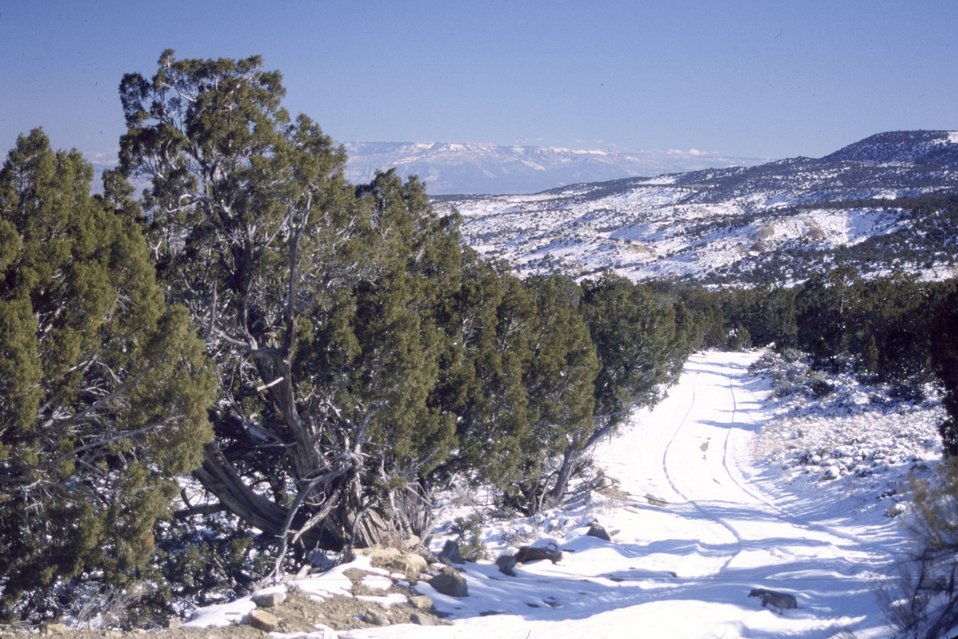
Lower Black Ridge Road Black Ridge Wilderness